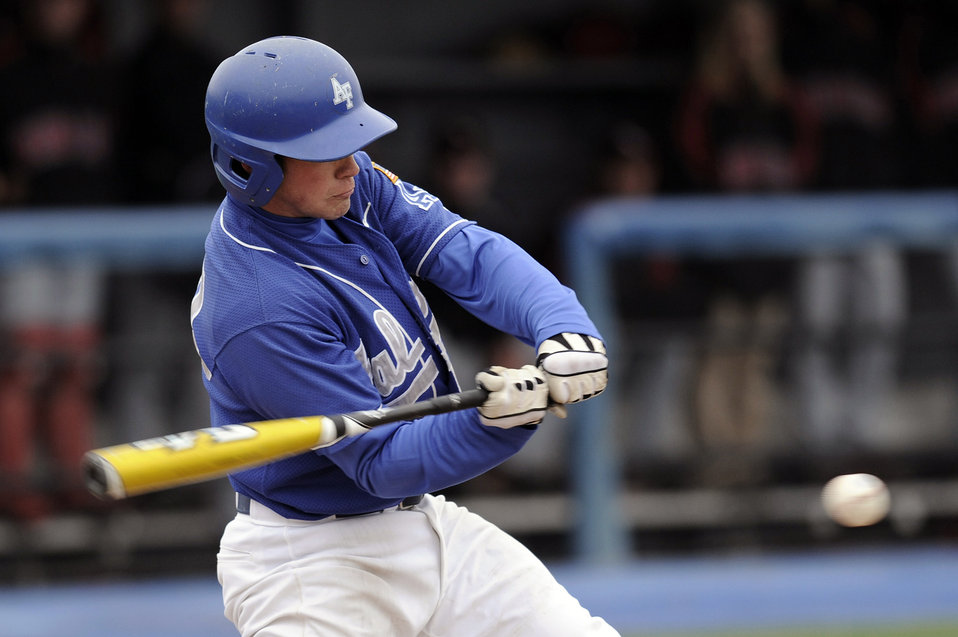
Baseball: Academy battles UNLV, falls 20-13

U.S. Air Force Academy sophomore second baseman Jon McMahon swings at a pitch as he went 2 for 6 during the 20-13 loss to the University of Nevada, Las Vegas at Falcon Field April 25 at the Academy in Colorado Springs, Colo. The Falcons had 18 hits on the day with three homers, but dropped to a 14-25 overall record, with a Mountain West Conference record of 3-8.